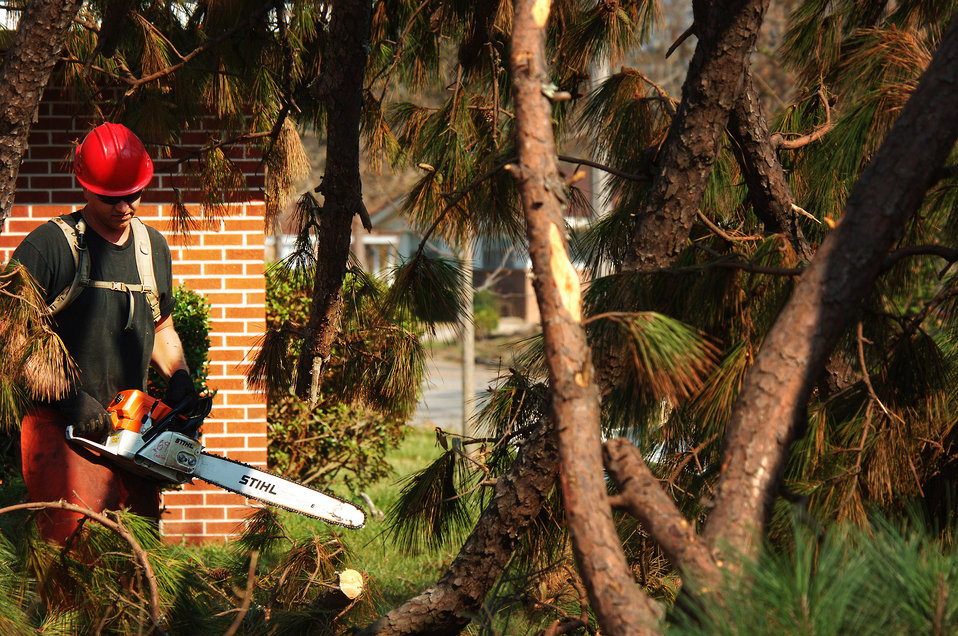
Keesler cleanup going well

KEESLER AIR FORCE BASE, Miss. -- Staff Sgt. Arthur Hughes uses a chainsaw to remove fallen trees that destroyed nearly 1,000 of 1,800 base homes. More than 90 Airmen with the 823rd Red Horse Squadron from Hurlburt Field, Fla., are deployed here to help with the base's hurricane recovery effort.